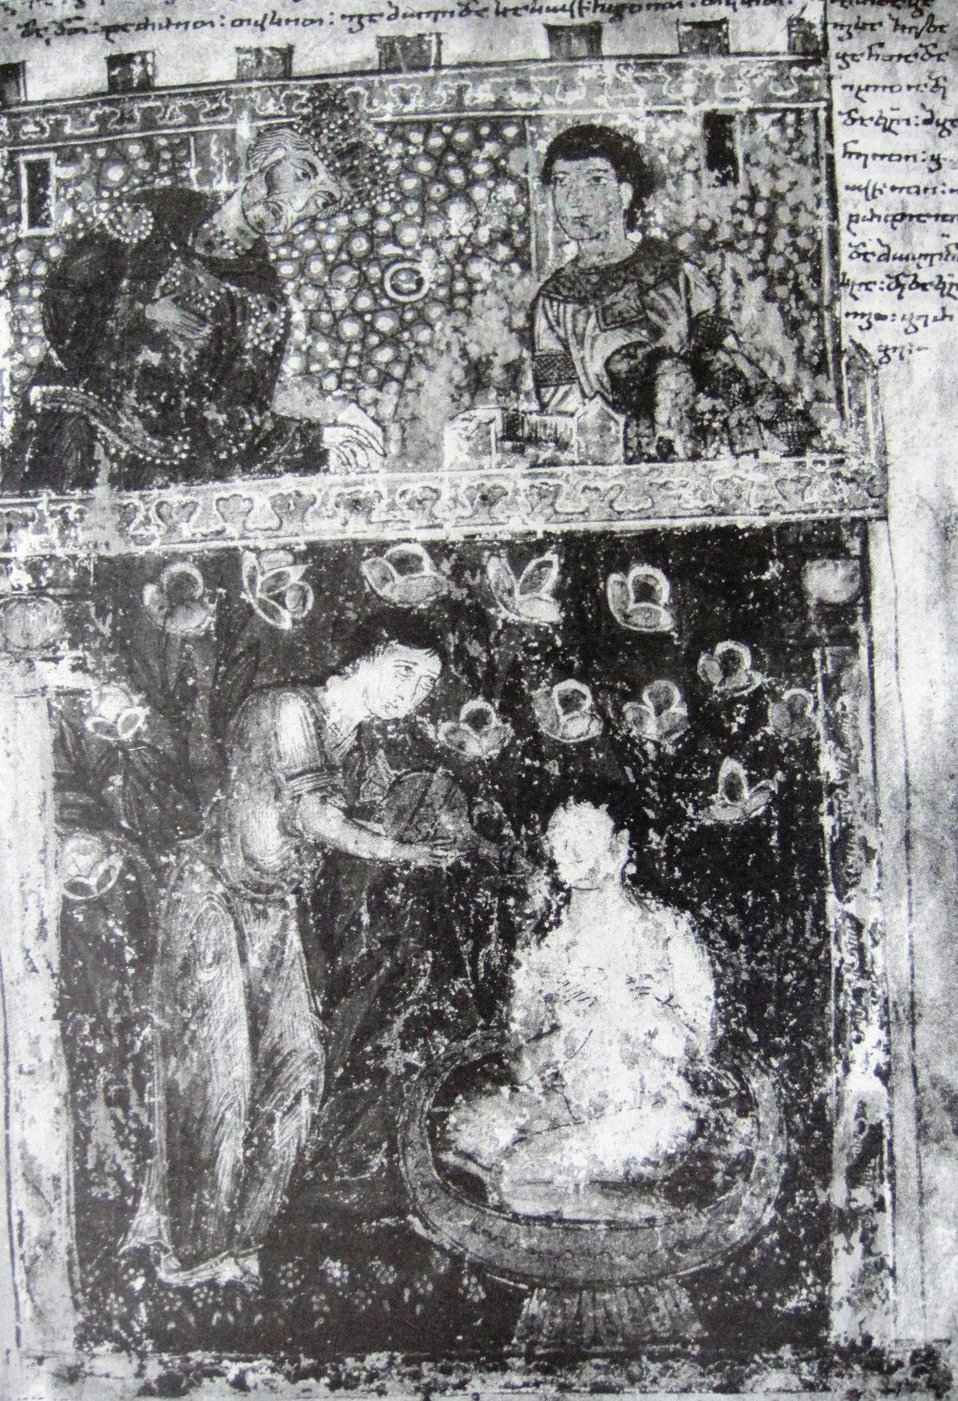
'David felling in love with Bathsheba', from a 13th-century Georgian MSS of the Psalms